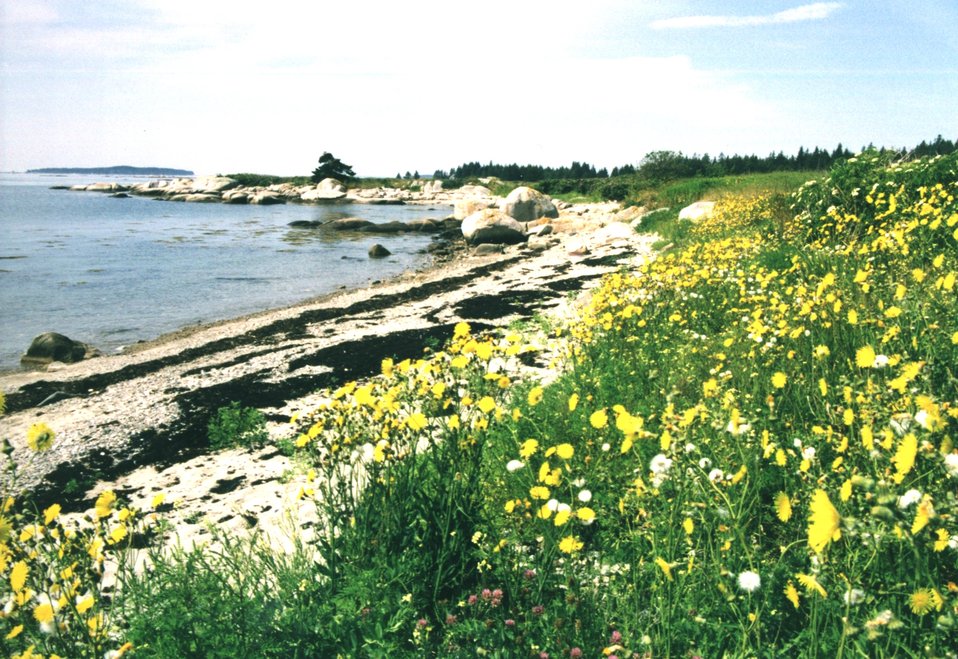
Birch Island beach showing gradation of sediment from coarse pebbles to sand as one moves up from the shoreline. Seaweed is evident along 'rack' line showing furthest extent of normal high tide. Wildflower seeds float in on algae and take root helping preserve sediment.